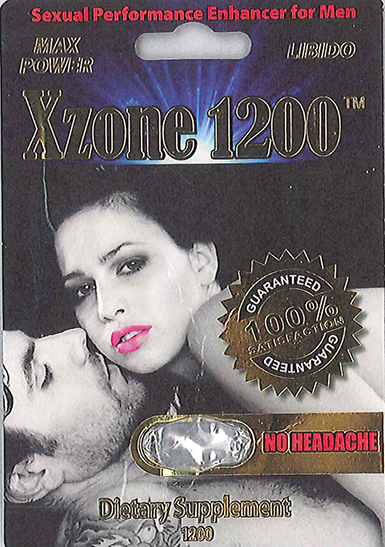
RECALLED – Dietary Supplement

April 1, 2014 – Product Recall – Nova Products, Inc. Issues Voluntary Nationwide Recall of Dietary Supplements with Undeclared Active Pharmaceutical Ingredients.